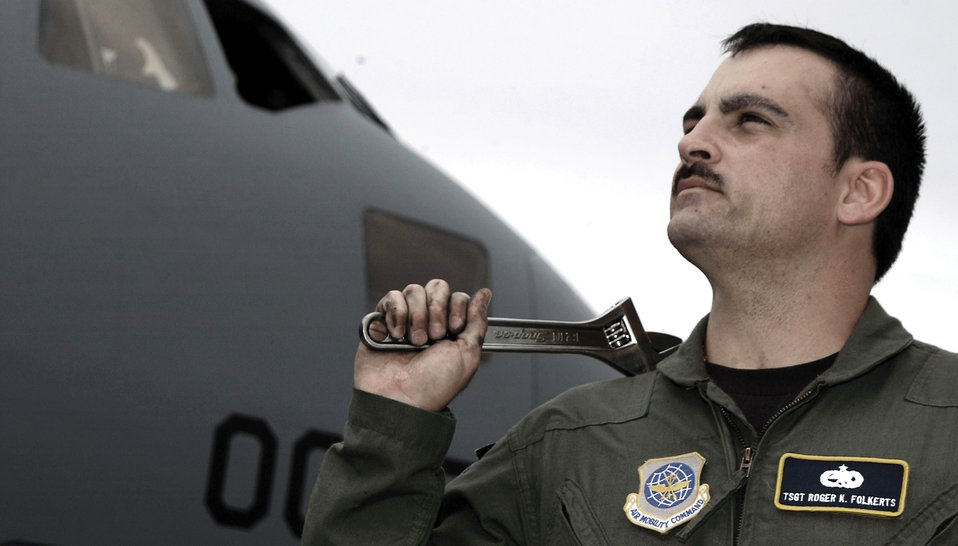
5,000 hours

CHARLESTON AIR FORCE BASE, S.C. -- Tech. Sgt. Rodger Folkerts has logged 5,000 hours in the C-17 Globemaster III as a flying crew chief. This is equal to traveling 2,590,000 miles -- enough to circle Earth more than 104 times.